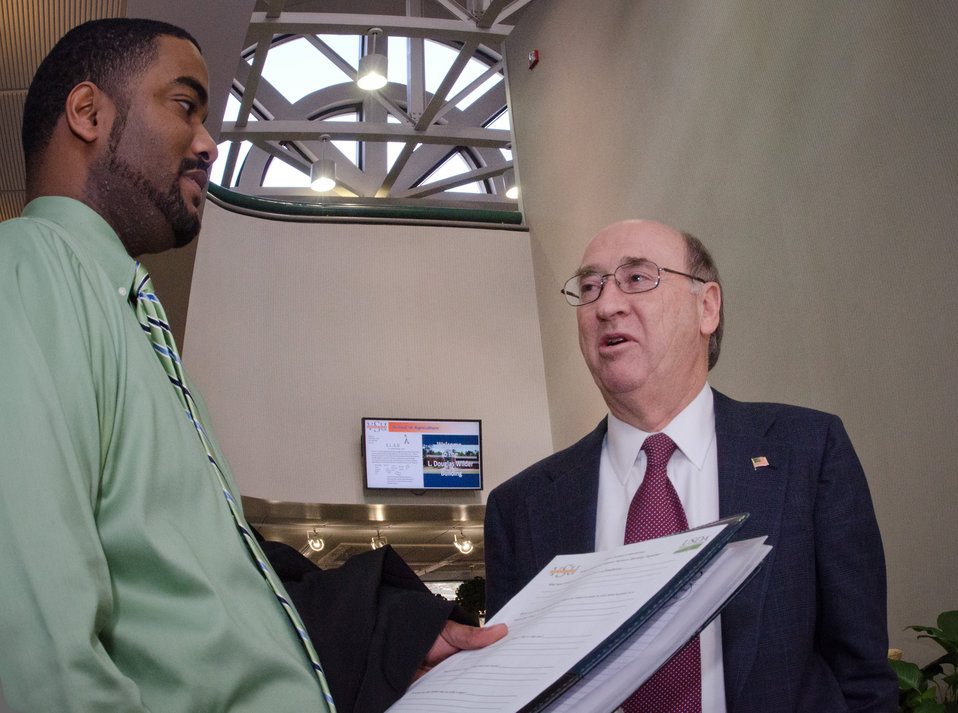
U.S. Department of Agriculture (USDA), Farm Service Agency, Virginia State Director Calvin Parrish, right, at the “Virginia State University (VSU), USDA and Virginia Farmers Working Together” outreach workshop in the VSU, L. Douglas Wilder building on Thursday, March 7, 2013, in Petersburg, VA. Farmers shared and learned new ways to do more with USDA services, and how to apply for programs that will help grow their business.